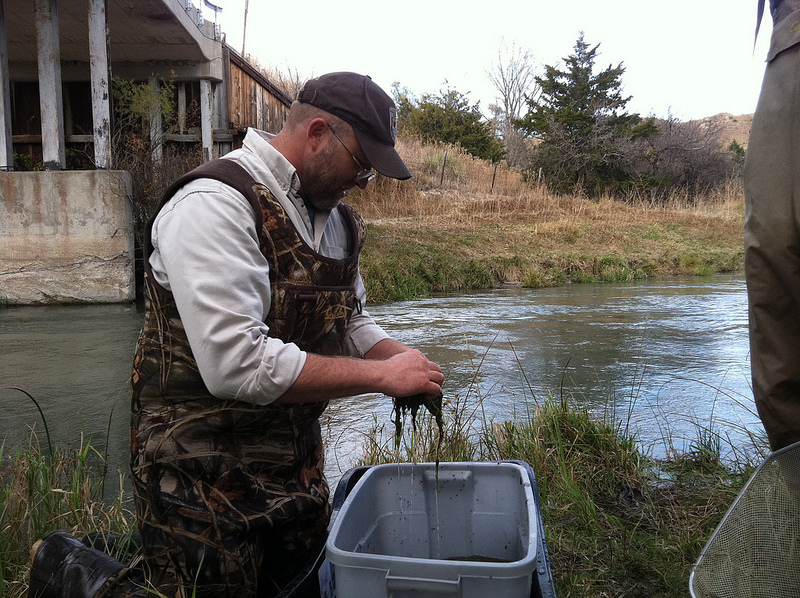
Sorting through Fish Samples

Robert Harms, Service wildlife biologist, sorts through dip net samples looking for the plains topminnow and other native fish.

Location: Dismal River near Halsey, Nebraska

Credit: Lindsay Vivian / USFWS

Photo Contest Entry #45